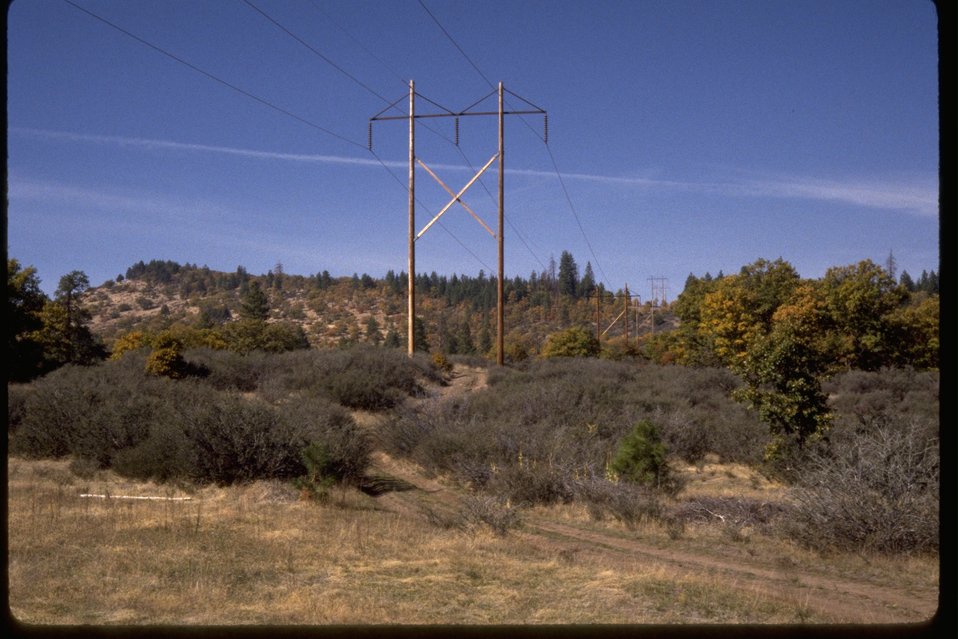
Schoheim Road and PPL line on Agate Flat.